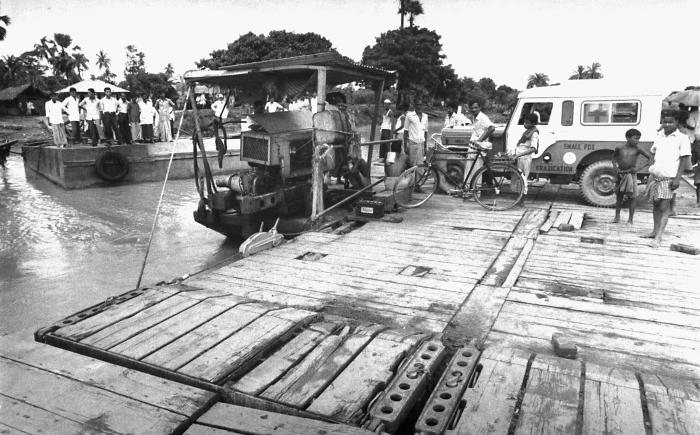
This photograph was captured by Pierre Claquin, M.D., B.A.C., who at the time was a member of the World Health Organization's Smallpox Eradication Program. It was provided by former E.I.S. officer, Stanley O. Foster M.D., M.P.H., was one of a series entitled 'The Story of One Smallpox Jeep', which depicted the travails faced by the jeep, and its occupants of public health practitioners, as they road through the Bangladesh countryside in an attempt to eradicate smallpox from the country. This Mahendra Jeep was being ferried across a river in order to continue its rural countryside journey educating residents about smallpox, its signs and symptoms. At the time of Smallpox Eradication, 72-76 ferries were used to cross the rivers. This was the Daukandi ferry, which traveled from Dhaka to Comilla; a route now traversed by a bridge. Travel which used to take 12-24 hours, now can be done in 2-3 hours by bridge, many which were blown up during the country's 1971 war with India.